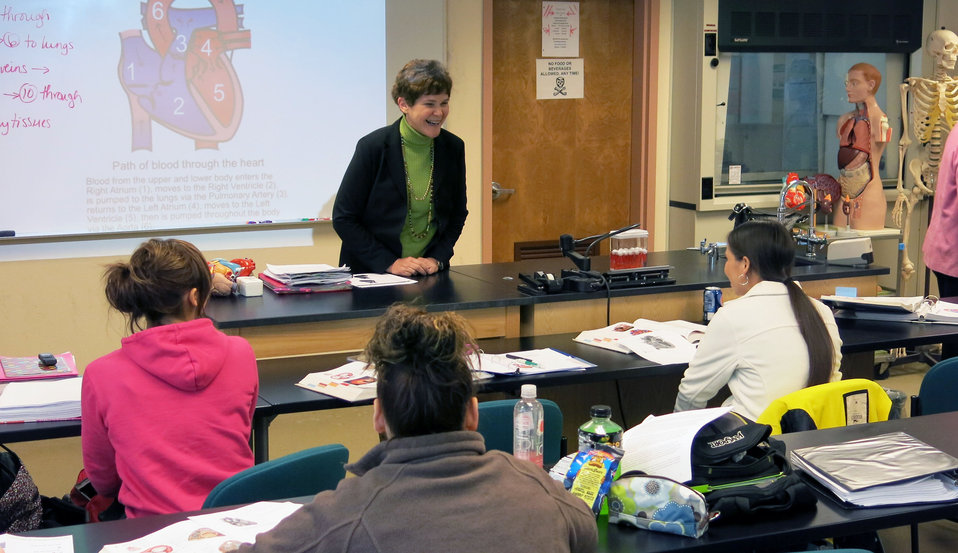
Agriculture Deputy Krysta Harden speaks to a Menominee Tribal biology class in Green Bay, WI on Tuesday, Apr. 15, 2014.